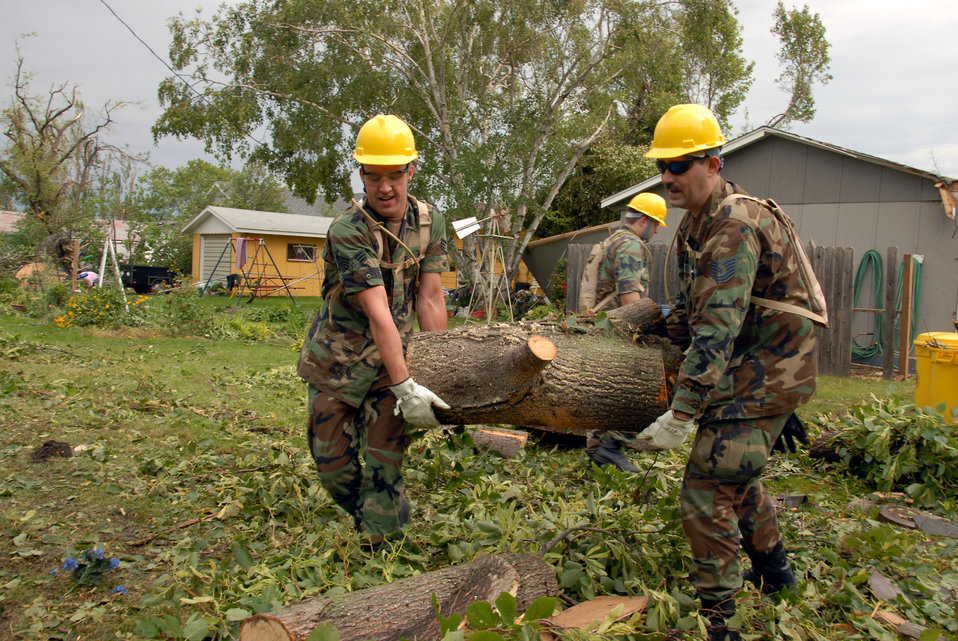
Tornado relief efforts

Senior Airman Brandon Miller (left) and Tech. Sgt. Richard Hayes remove fallen tree branches and debris from yards in order to clear a path for power line workers Aug. 28 in Northwood, N.D., Aug. 28. A Fujita scale F-4 tornado that hit the city on Aug. 27 caused the damage.